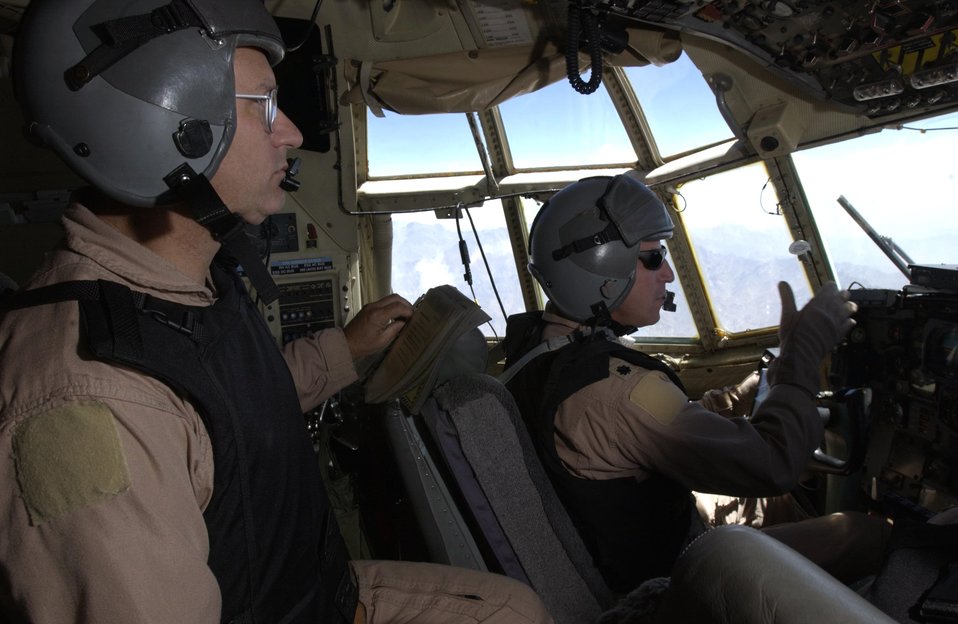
Guardsmen making K-2 connections

OVER AFGHANISTAN -- Master Sgt. Kenny Mullock (left) watches for stray aircraft while Lt. Col. Craig Wilds focuses on his approach. During this mission, Airmen from the Missouri Air National Guard delivered 1,700 pounds of cargo and 14 passengers to Bagram Air Base, Afghanistan. Sergeant Mullock is a flight engineer.